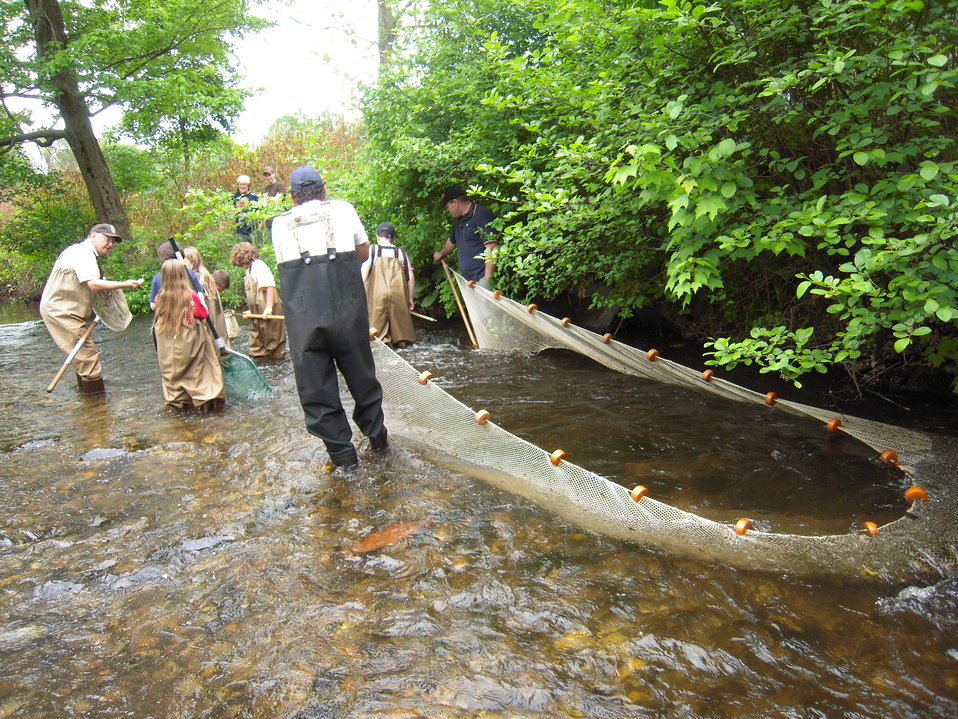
Large net set in water